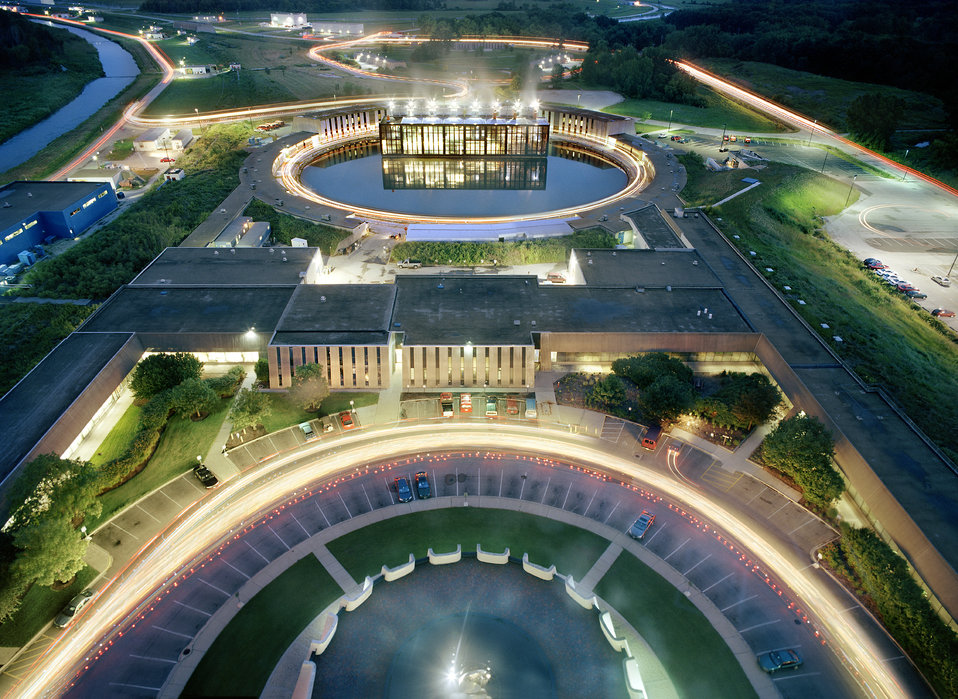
ACCELERATOR COMPLEX AND CENTRAL UTILITY BUILDING AS SEEN FROM THE TOP OF WILSON HALL AT FERMI NATIONAL ACCELERATOR LABORATORY.